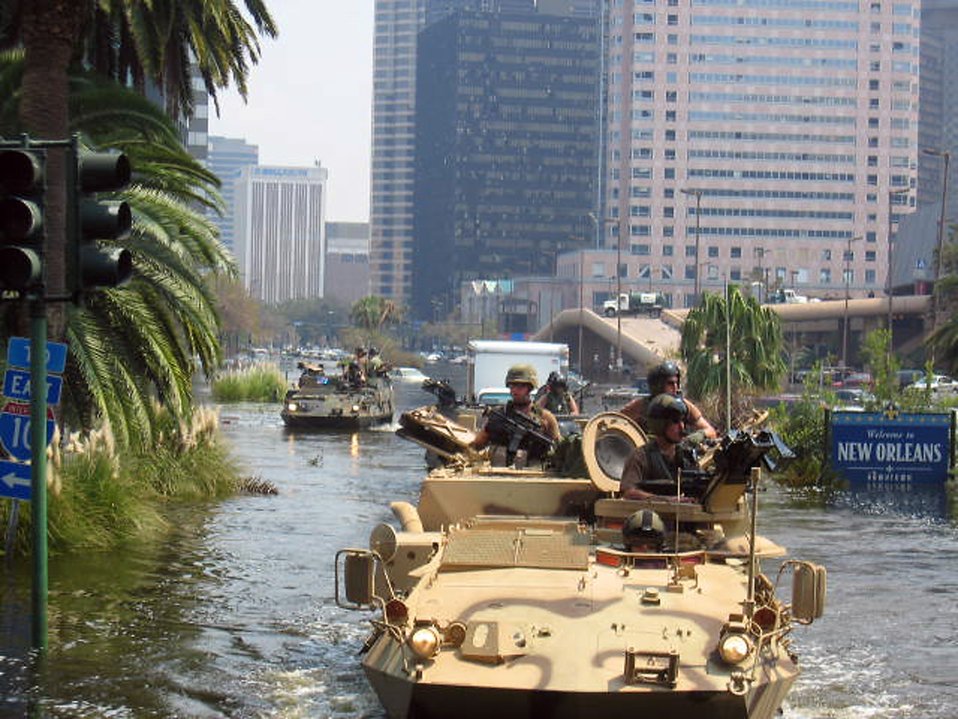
Through the flood

NEW ORLEANS -- Counterdrug National Guardsmen navigate through the flooded city of New Orleans in Light Armored Vehicles searching for survivors stranded in their homes in the aftermath of Hurricane Katrina.